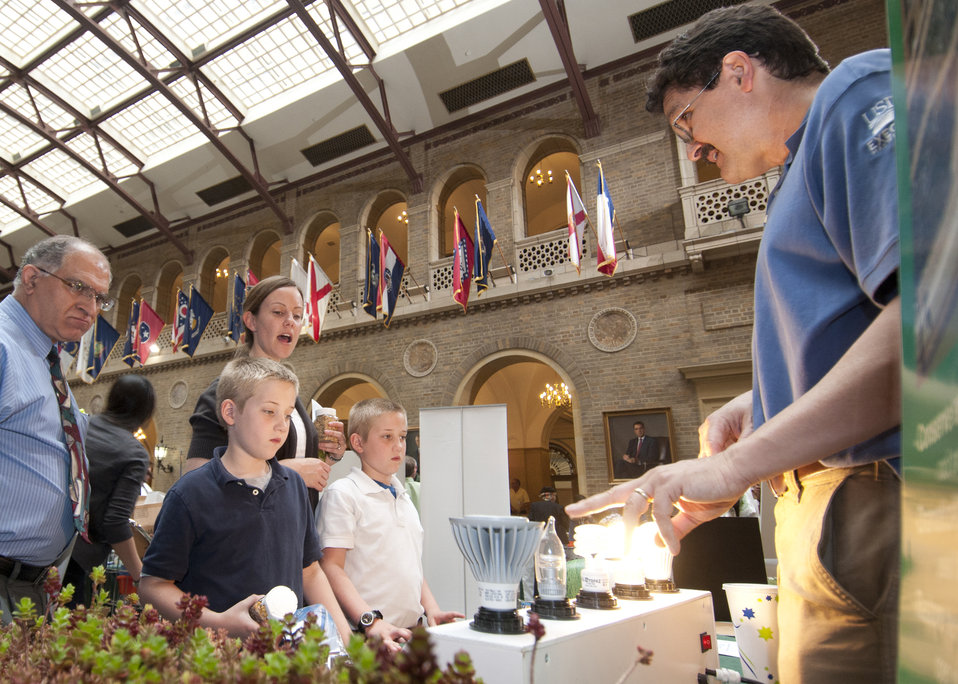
The U. S. Department of Agriculture (USDA) held its annual “Take Your Child to Work Day” on the patio of the Whitten Building, in Washington, DC, on Thursday, April 28, 2011. The program is designed to introduce young people to USDA’s wide range of responsibilities and services. Danny and Ryan McMahon (Angela McMahon stands behind her sons) learn about energy saving light bulbs at the Office of Operations exhibit at Agriculture’s “Take Your Child to Work Day” event.